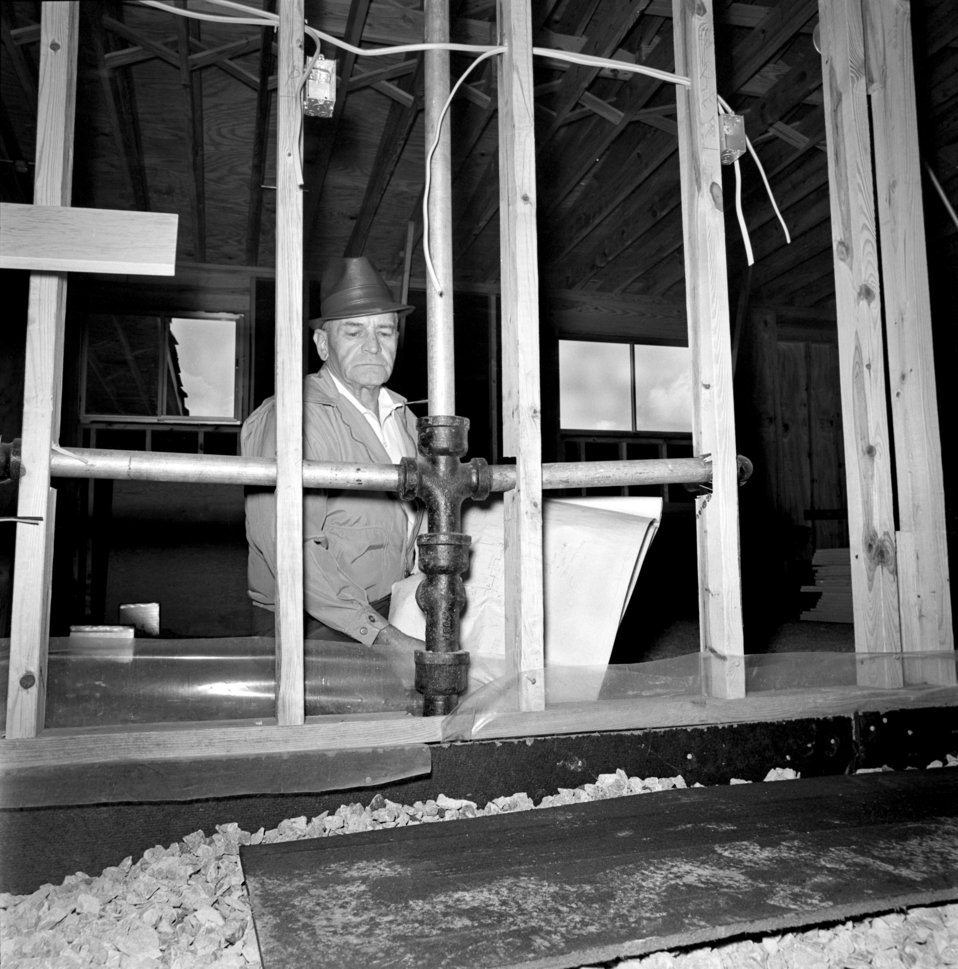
Plumer Oak Ridge 1968

68-579c DOE photo Frank Hoffman 10-1968 Oak Ridge Tennessee